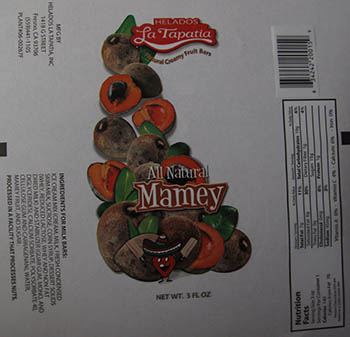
RECALLED – Ice cream products

March 19, 2014 – Product Recall – Helados La Tapatia, Inc. Recalls Products Because of Possible Health Risk.